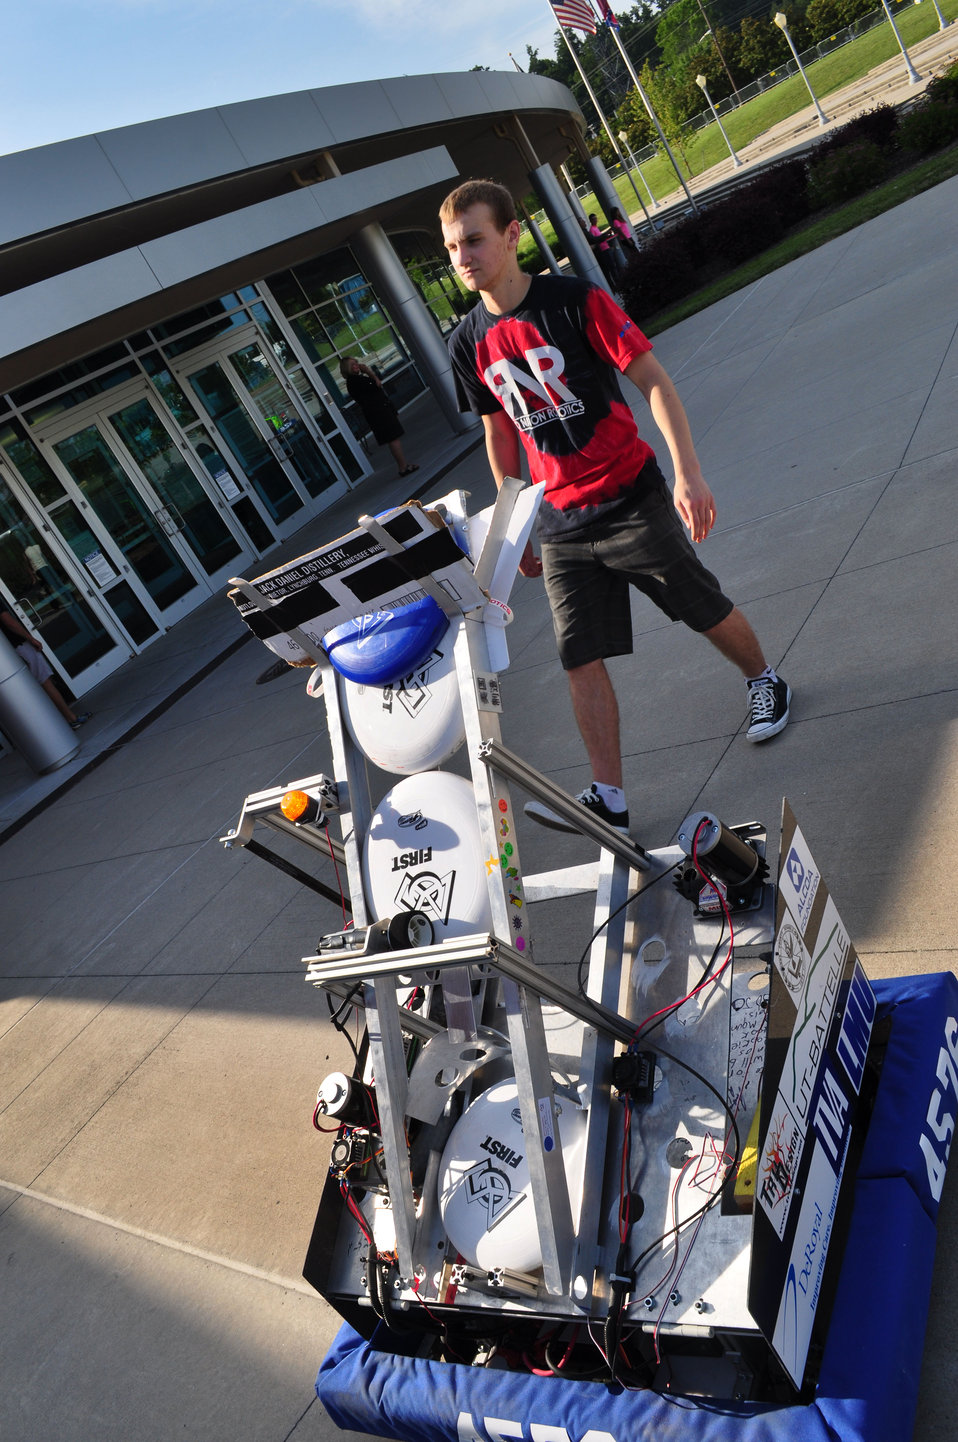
Tennessee Valley Corridor 2013 Oak Ridge

13-062 DOE photo Lynn Freeny 5-29-2013 Oak Ridge Tennessee